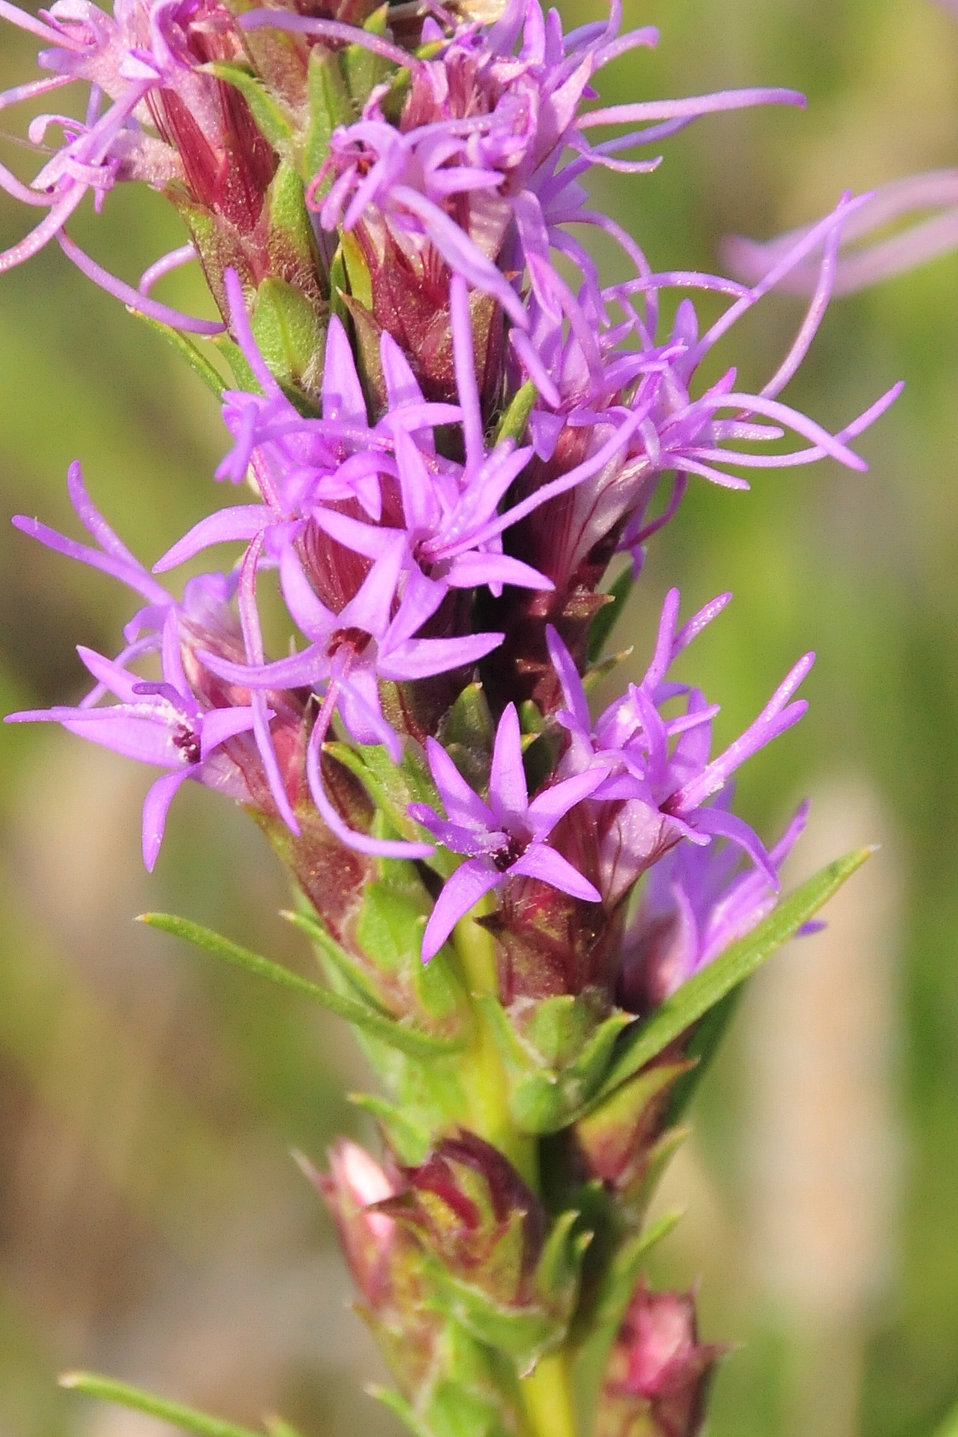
Blazingstar (Liatris punctata) on Lacreek National Wildlife Refuge 02

Blazingstar colors the mixed grass prairie on Lacreek National Widllife Refuge.